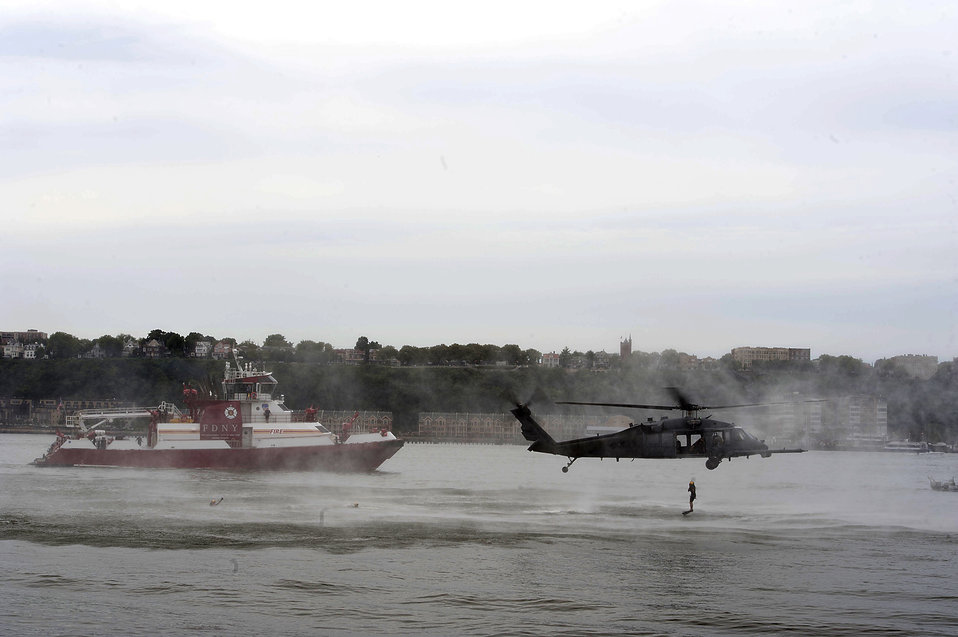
2012 Air Force Week NYC

The 106th Rescue Wing of the New York Air National Guard performs a water rescue demonstration with an HH-60 Pave Hawk helicopter during Air Force Week 2012 in New York City on Aug 19.